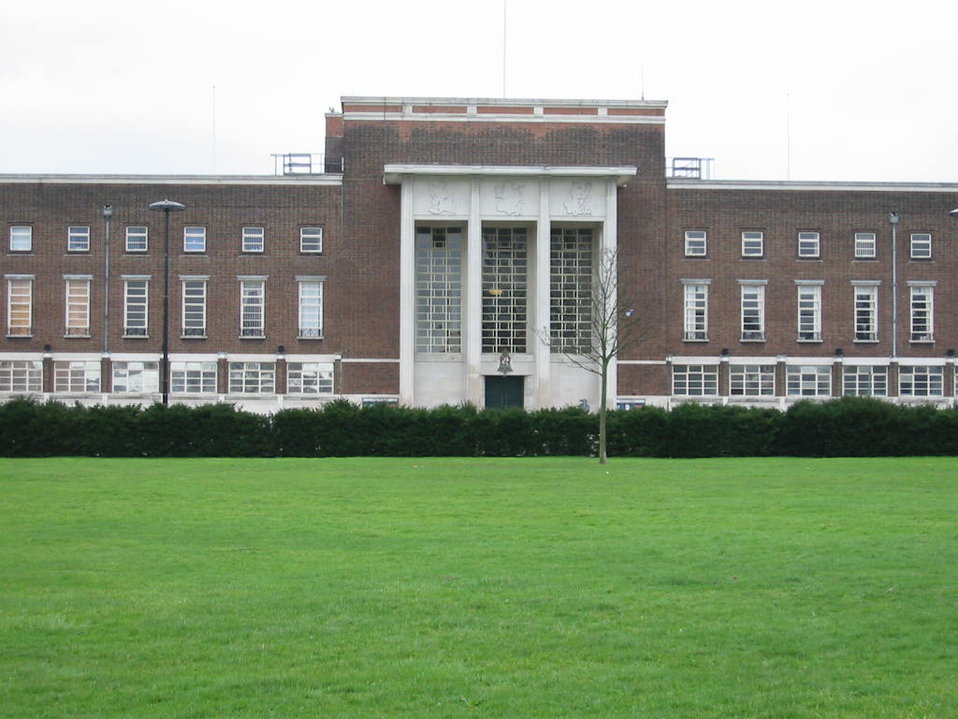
Becontree Heath, London.